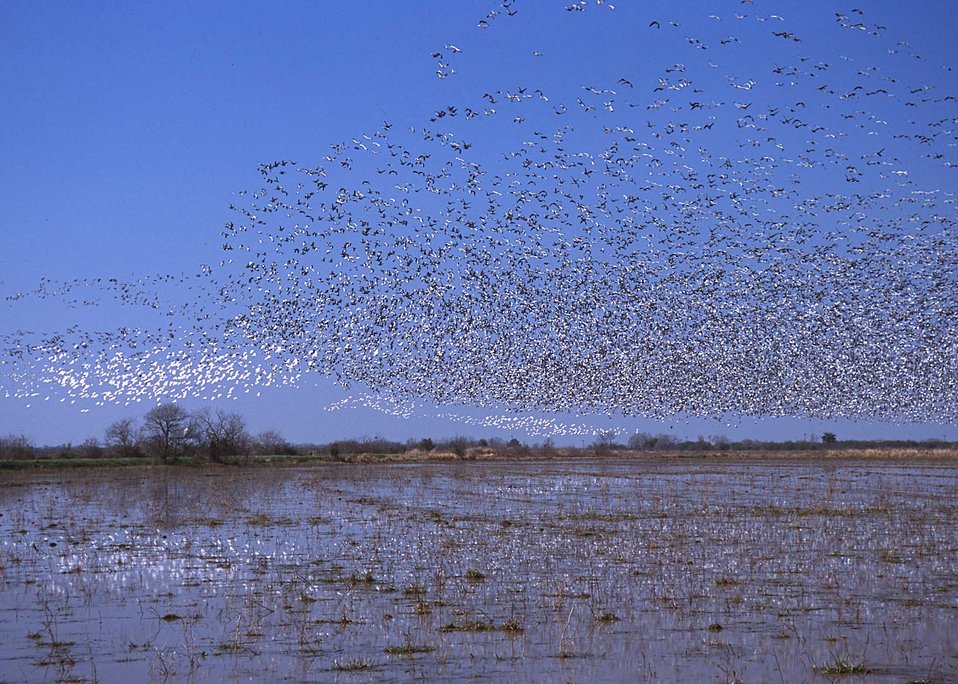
Flooded croplands near Gueydan, Louisiana attract thousands of geese in the winter.